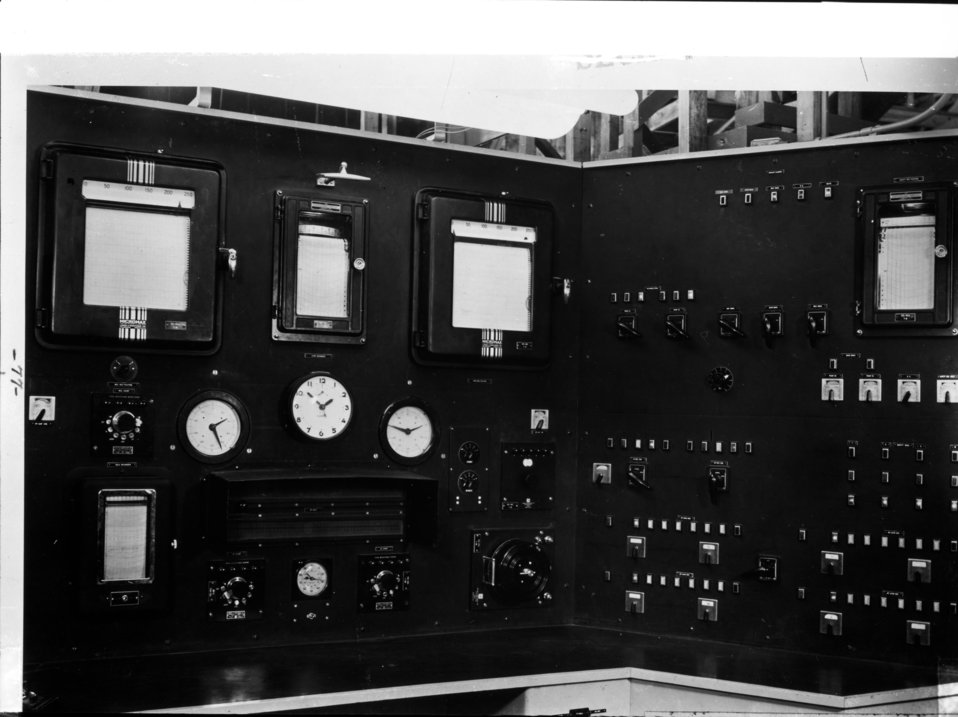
X-10 at Oak Ridge